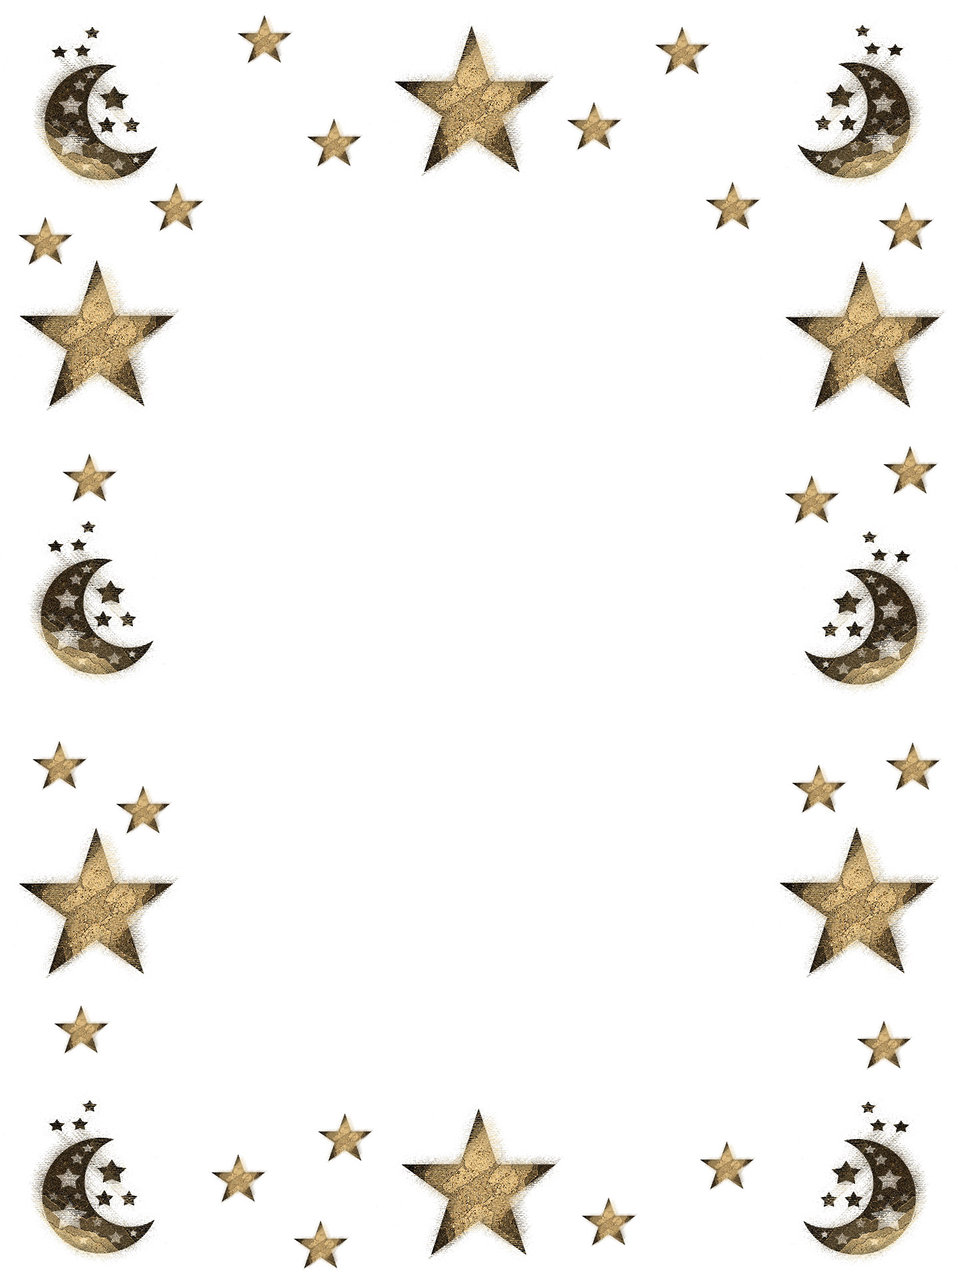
Background 319

Background stationery.